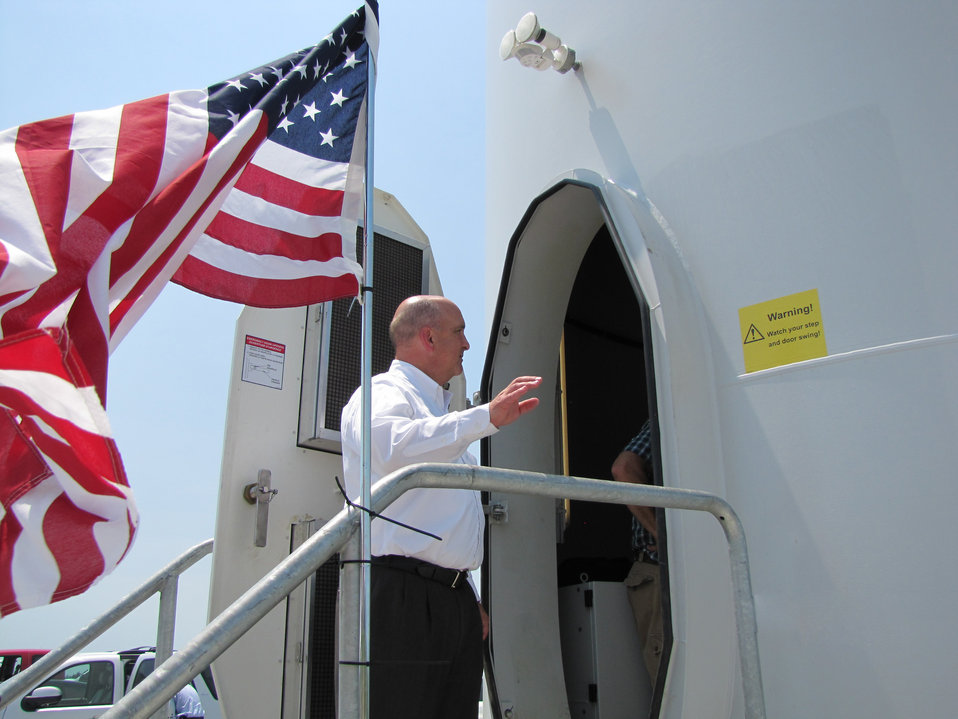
Sen Harkin Iowa Visit July 2 1

U.S. Department of Agriculture (USDA) Rural Development (RD) Iowa State Director Bill Menner inspects the new turbine in Wiota, IA on July 2, 2012. The $3 million project required 22 local investors and a loan guarantee from USDA’s Rural Development Rural Energy for America Program (REAP).